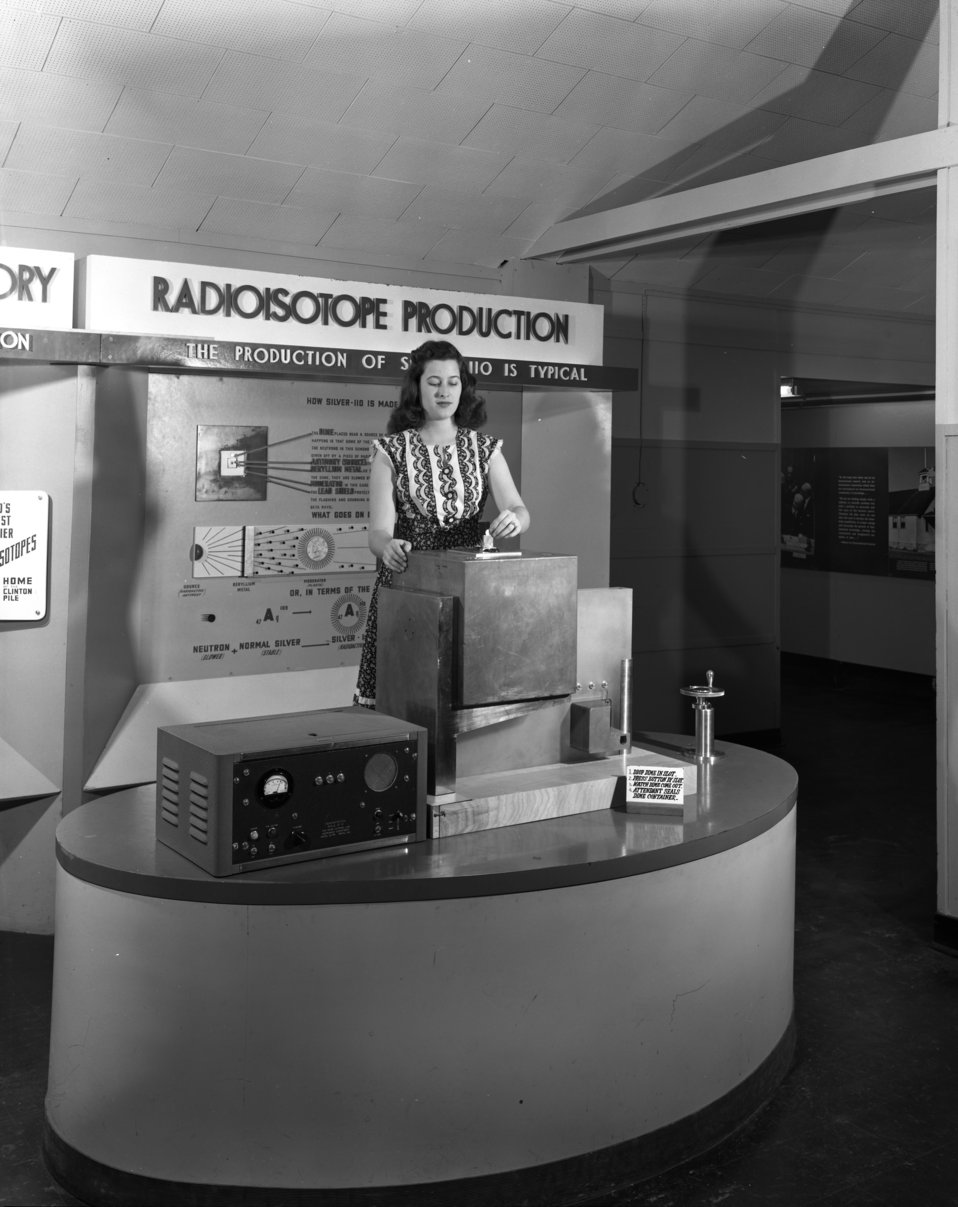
Radiosotope Display AMSE Oak Ridge 1949

5519-6 DOE photo Ed Westcott 4-22-1949 Oak Ridge Tennessee